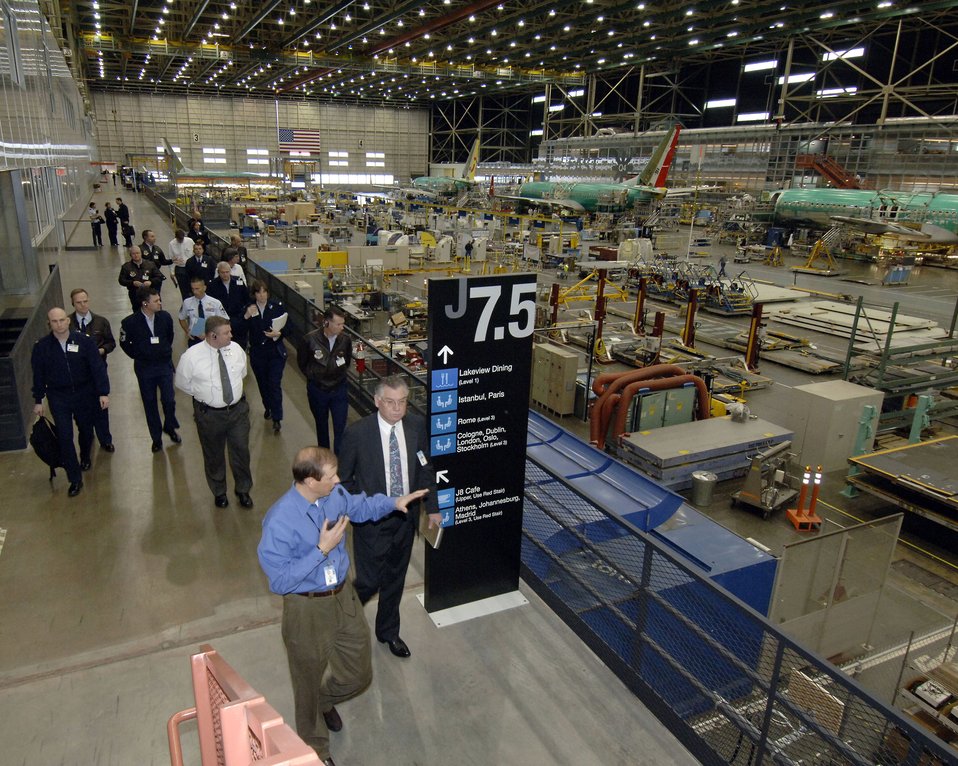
AFSO21 industry exchange

Air Force senior leaders take a tour of Boeing's 737 Production Facility March 14 in Seattle as part of the AFSO21 industry exchange. The site visit gave Air Force representatives a first-hand look at how Boeing incorporates Lean processes into its business practices.